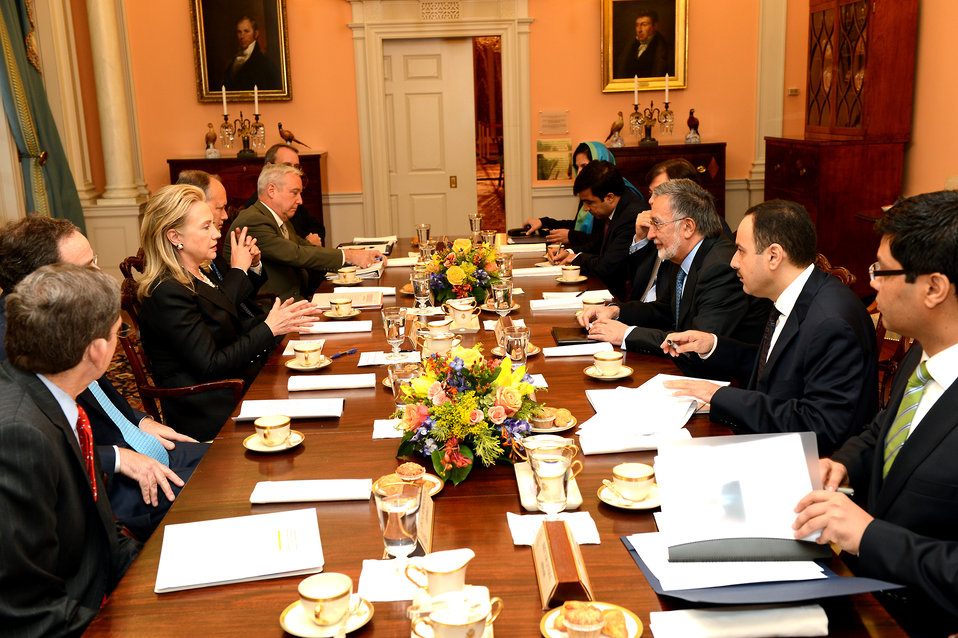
Secretary Clinton With Afghan Foreign Minister Rassoul

U.S. Secretary of State Hillary Rodham Clinton meets with Afghan Foreign Minister Zalmai Rassoul at the U.S. Department of State in Washington, D.C., October 3, 2012.